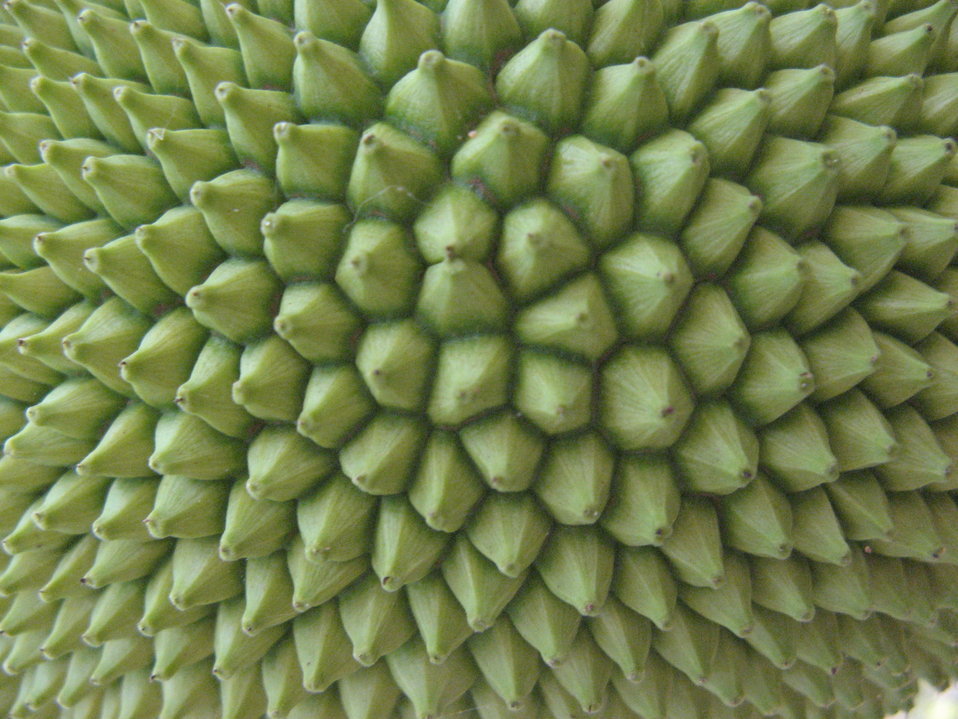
മലയാളം: ചക്കയുടെ പുറം തൊലി